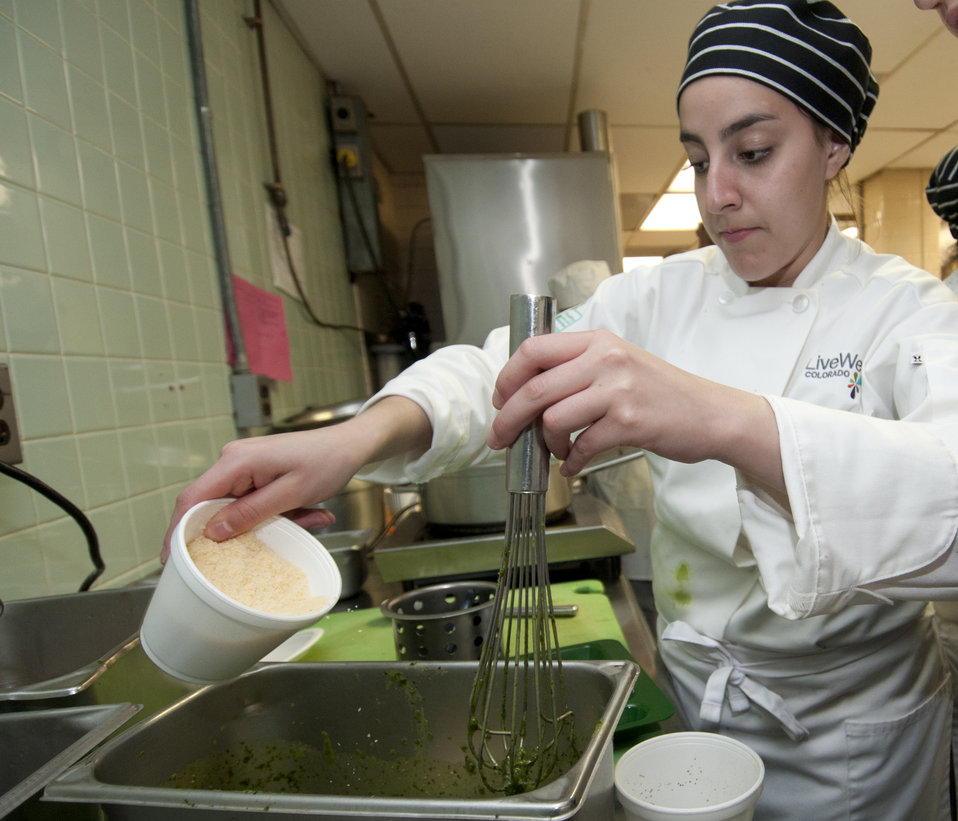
Denver's Livewell student chef Suzi Hernandez adds grated cheese to her creation of pesto during the Cooking Up Change, National Healthy Cooking Competition at the USDA in Washington, DC, on Monday, May 23, 2011.